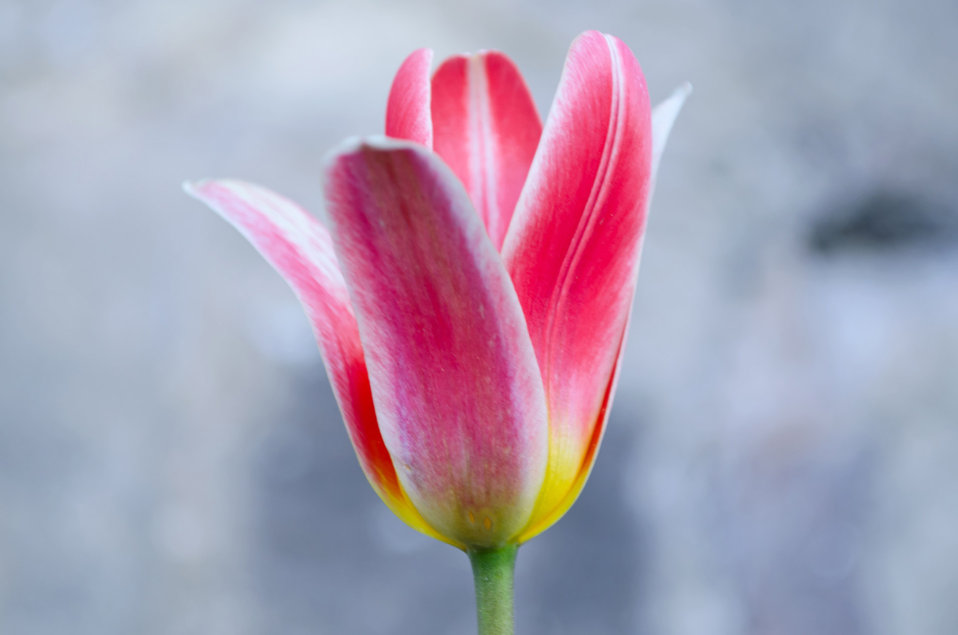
Flower - tulip.